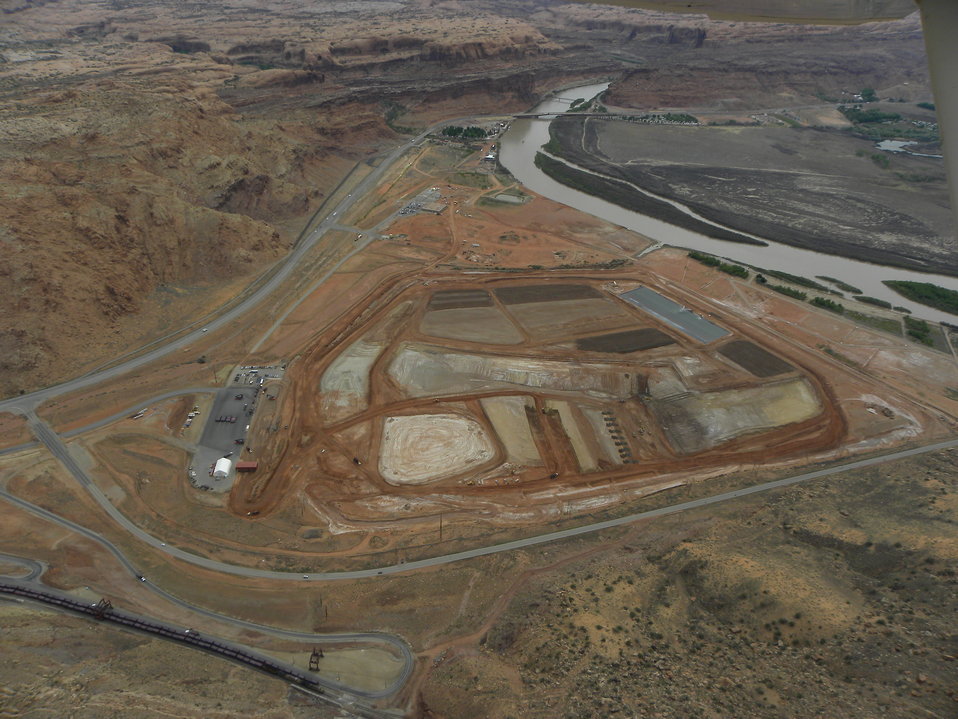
Recovery Act Shipments of Mill Tailings Finish at 2.6 Million

As of June 2011, Recovery Act workers moved an estimated 2.6 million tons of uranium mill tailings to a permanent disposal facility in Utah. Railcars that transport the tailings from the Moab Uranium Mill Tailings Remedial Action Project site to the disposal facility about 30 miles north can be seen in the lower left corner of this aerial photo. The tailings pile is in the center of the photo. More than 200 employees were hired with Recovery Act funds received by the Moab Project. The tailings are remains from processing uranium ore for national defense programs.